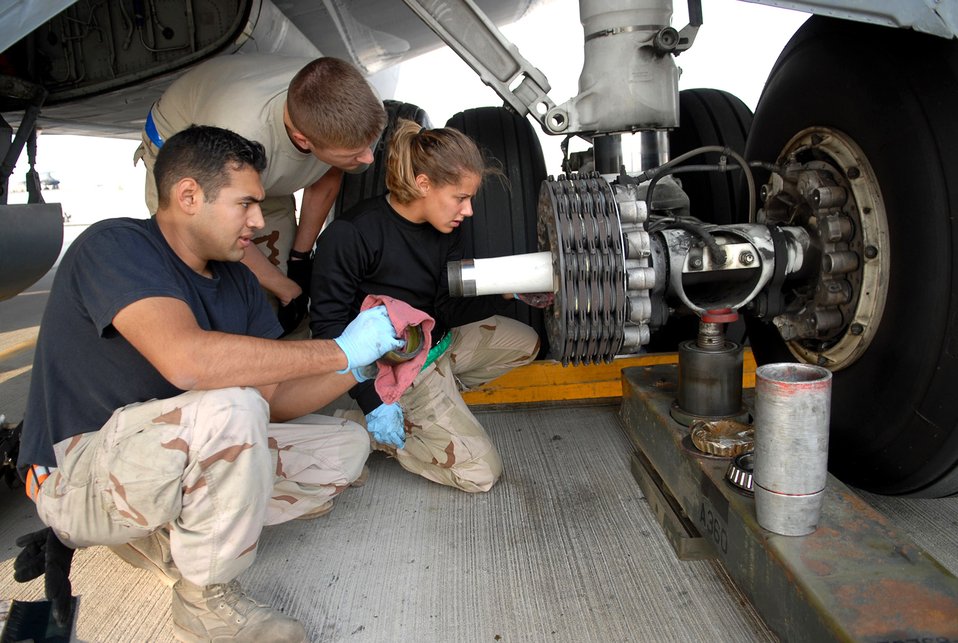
It's time for a change

Staff Sgt. Ruben Mariscal (from left), Staff Sgt. Frank Veres and Airman 1st Class Abigail Smith prepare to install a new wheel on a KC-135 Stratotanker Jan. 5 at an air base in Southwest Asia. They are all assigned to the 379th Expeditionary Aircraft Maintenance Squadron.